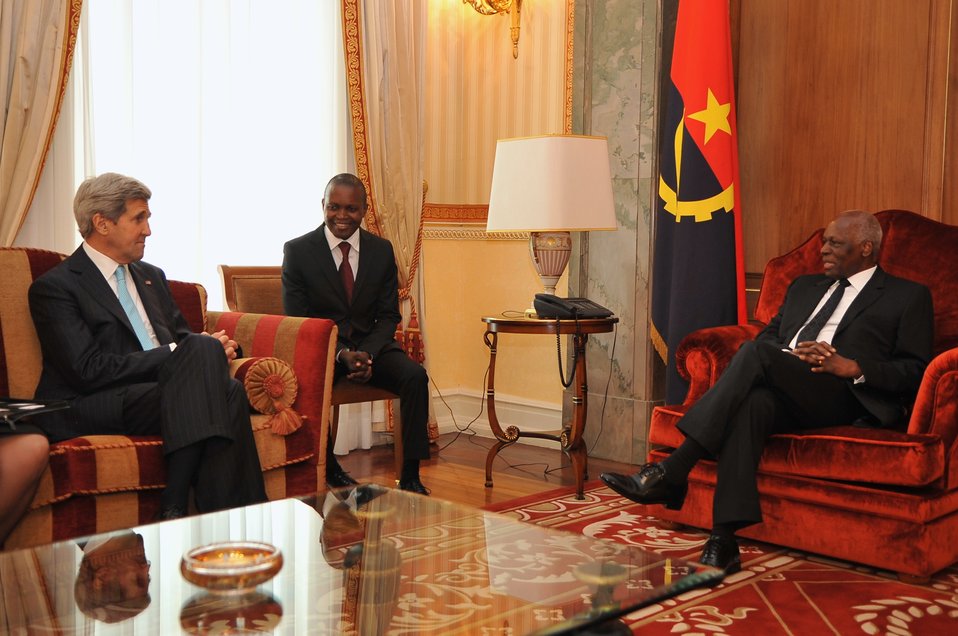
Secretary Kerry Chats With Angolan President dos Santos in Luanda

U.S. Secretary of State John Kerry and Angolan President Jose Eduardo do Santos chat before their bilateral meeting at the Presidential Palace in Luanda on May 5, 2014.